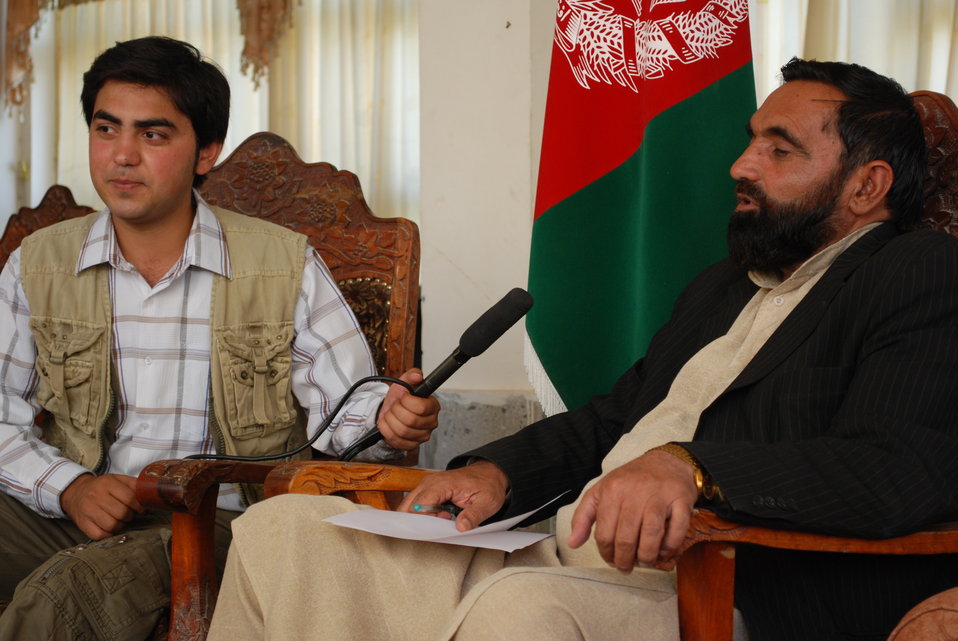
'On the Road' in Paktya Province